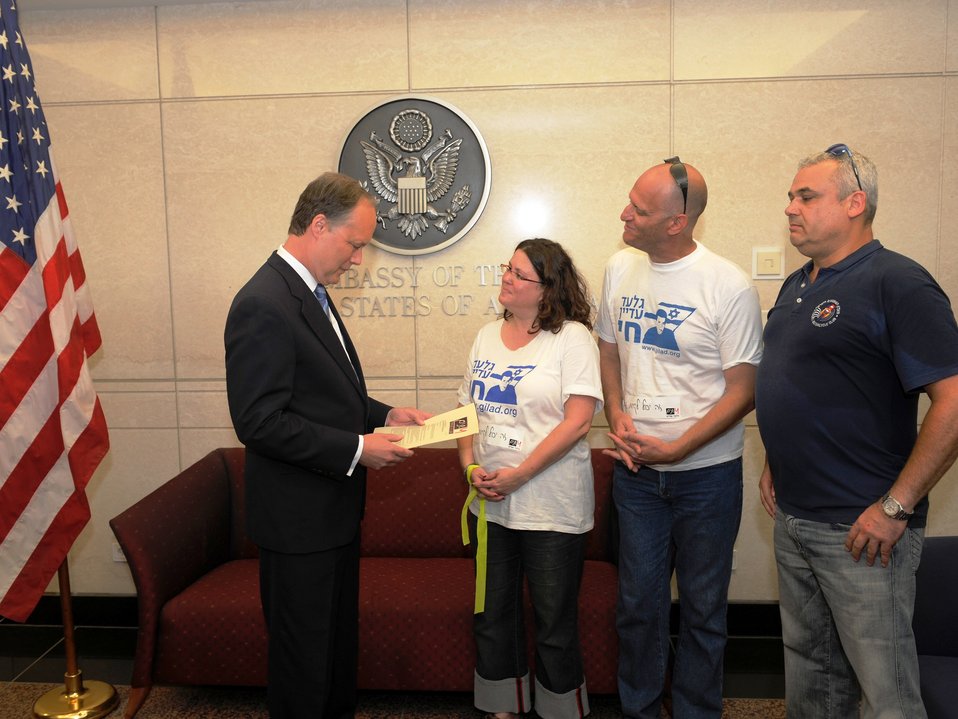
Ambassador Cunningham Reads Letter From Civil Drafting Chamber Representatives for Gilad Shalit

U.S. Ambassador to Israel James Cunningham reads a letter given to him by representatives from the Civil Drafting Chamber for Gilad Shalit, (left to right) Inbal Braverman, Kobi Neeman, and Eyal Brandt, on the fourth anniversary of his capture on June 25, 2010, in Tel Aviv, Israel.